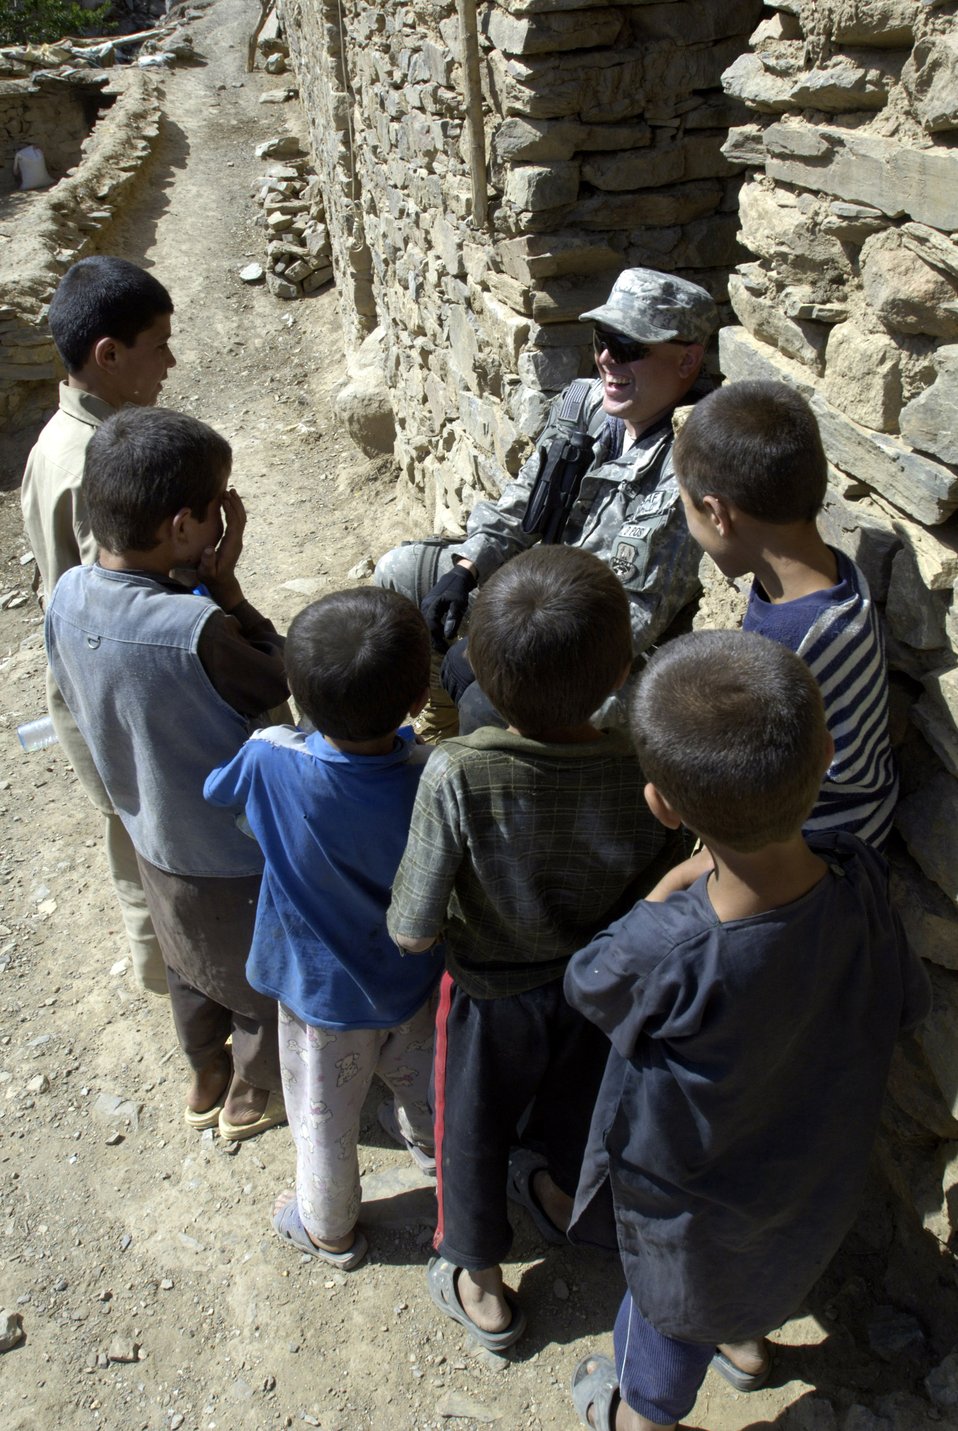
Airmen trek over mountains to deliver aid in Afghanistan

Tech. Sgt. Ralph Binion III shares a laugh with village boys Aug. 7 in Roydara village in the Shutol district of Panjshir province, Afghanistan. Sergeant Binion is a services craftsman deployed from Mountain Home Air Force Base, Idaho, and is a member of the Panjshir Provincial Reconstruction Team. He and his fellow PRT members made an 11-mile round-trip trek over a mountain pass and into a river valley to provide medical care to Afghans living in Roydara.